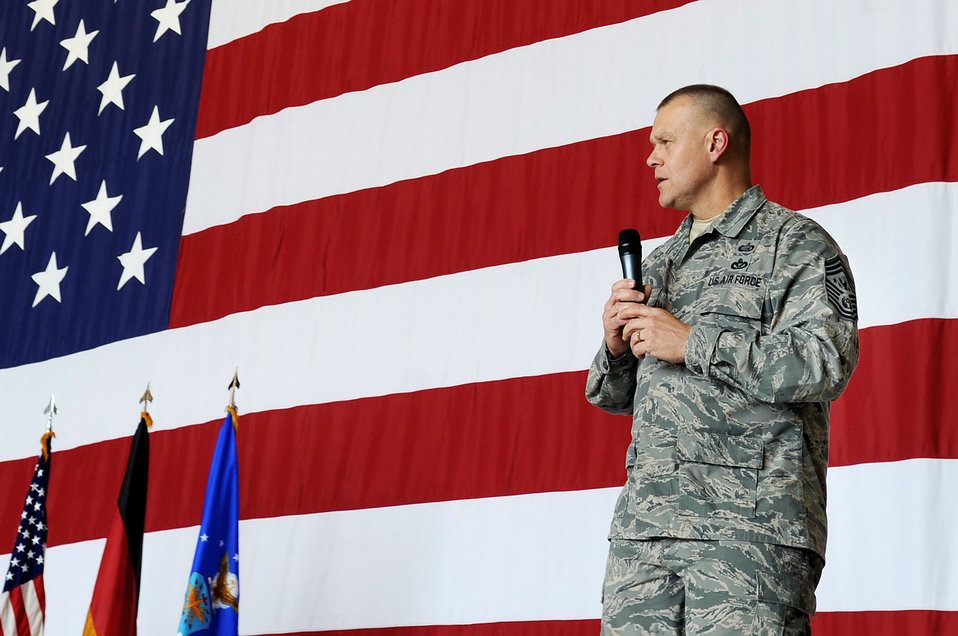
Chief Master Sergeant of the Air Force visits Ramstein Airmen, families

Chief Master Sgt. of the Air Force James A. Roy speaks to Airmen during an enlisted call July 7, 2010 at Ramstein Air Base, Germany. Chief Roy and his wife, Paula, visited several the 603rd Air Operations Center, 435th Contingency Response Group and Landstuhl Regional Medical Center.